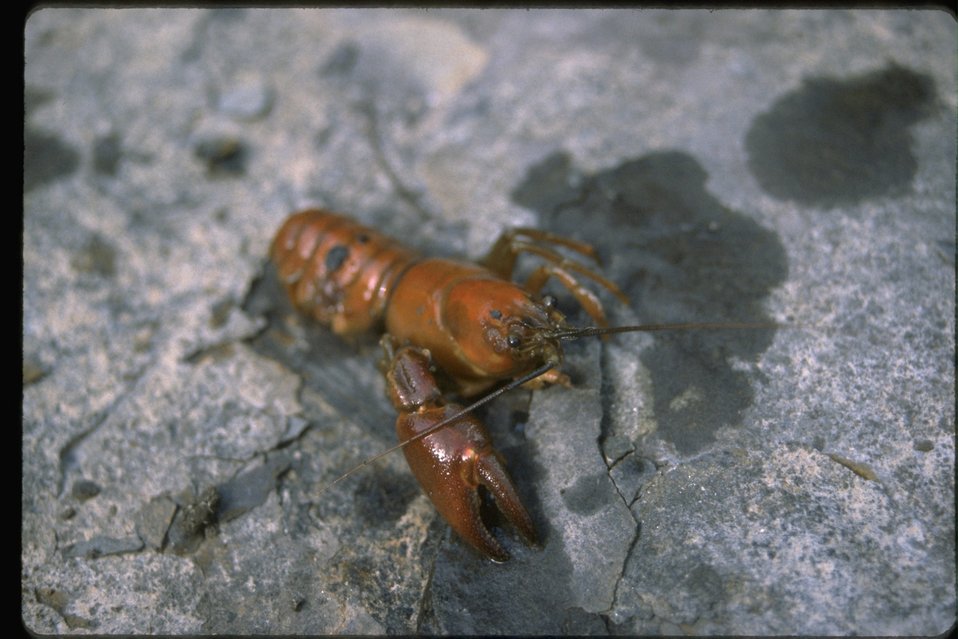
Macro shot of a crayfish.